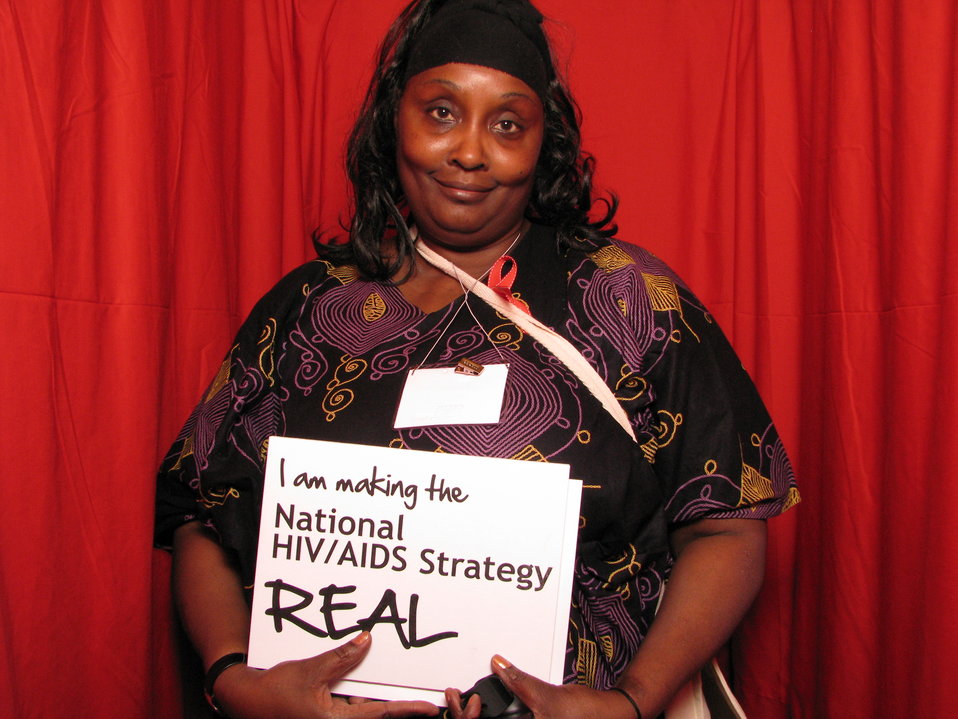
I am making the National HIV/AIDS Strategy REAL

From the AIDS.gov photo booth at the U.S. Conference on AIDS, September 2010 (Orlando, FL).